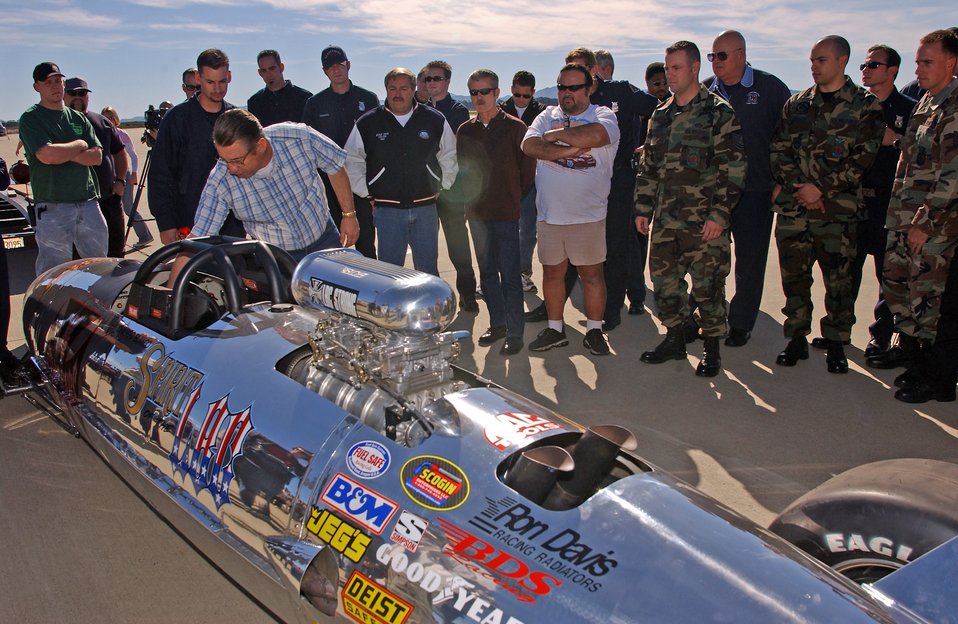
Monster Garage: Take II

VANDENBERG AIR FORCE BASE, Calif. -- Al Teague gives the Belly Tank Lakester a last-minute inspection before Jesse James, from the TV show